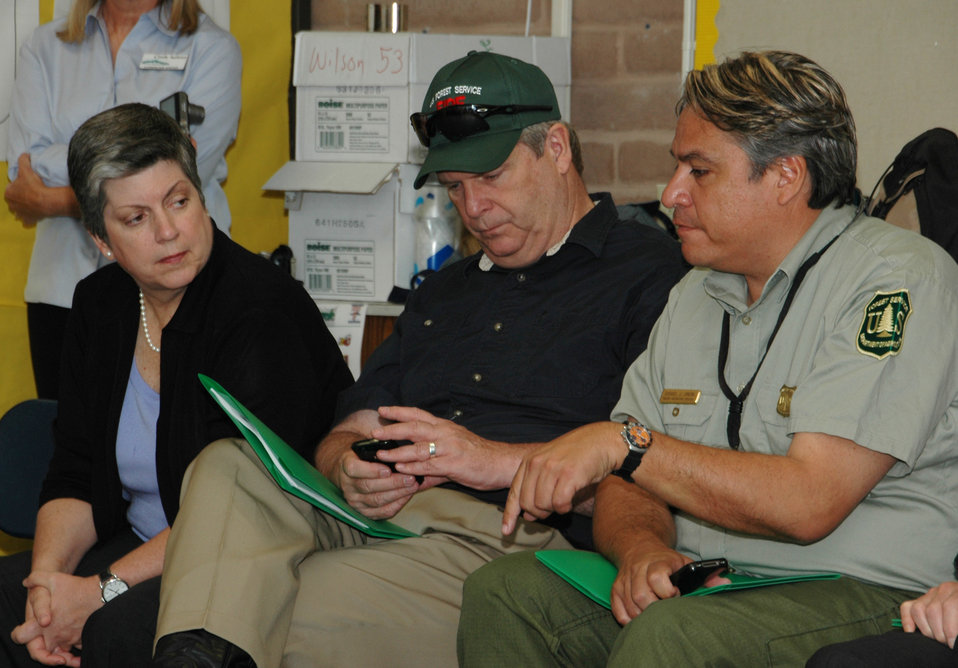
Homeland Security Secretary Janet Napolitano and Agriculture Secretary Tom Vilsack are briefed on the Waldo Canyon Fire near Colorado Springs, CO on Tuesday, July 3, 2012.